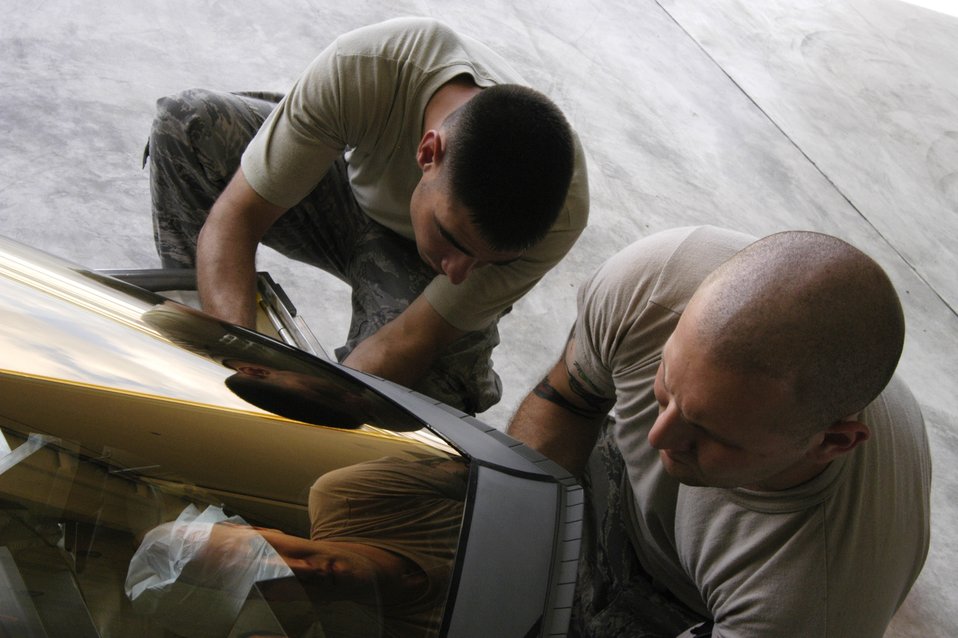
Egress technicians keep Raptors covered

Senior Airman Ryan Ott and Staff Sgt. Tim Sullivan prepare an F-22 canopy for installation at Andersen Air Force Base Feb. 18. Members of the 90th Expeditionary Fighter Squadron and the 36th Expeditionary Maintenance are deployed out of Elmendorf AFB, Alaska, with more than 250 Airmen in support of the Pacific theater security package. Sergeant Sullivan and Airman Ott are 36th Expeditionary Maintenance Squadron F-22 egress and systems specialists.